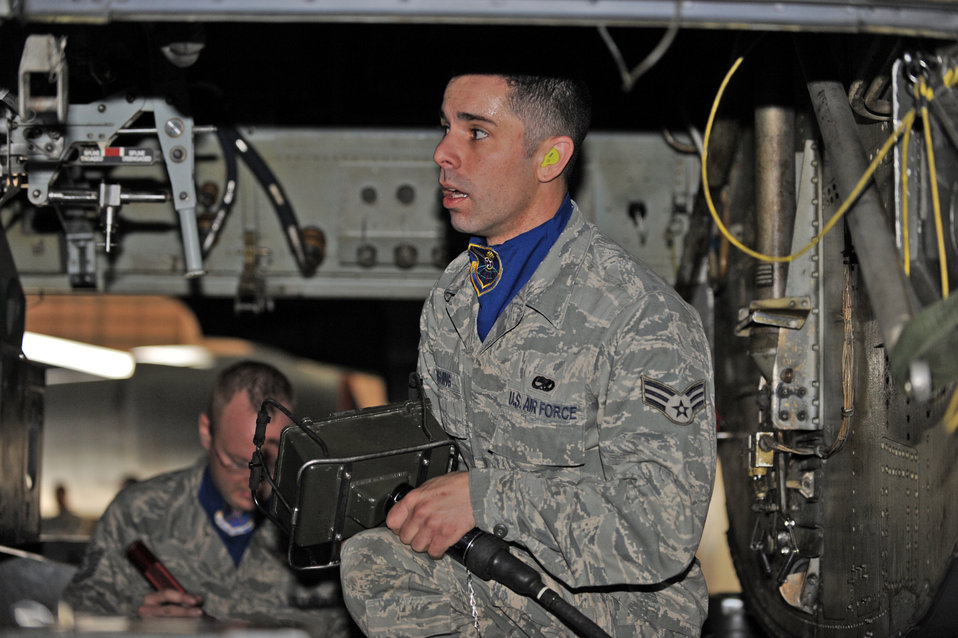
Global Strike Challenge load competition kicks off at Minot

Senior Airman Jesse Rushing participates in a load crew competition April 13, 2010, at Minot Air Force Base, N.D. Airman Rushing is a 5th Aircraft Maintenance Squadron load crew member.